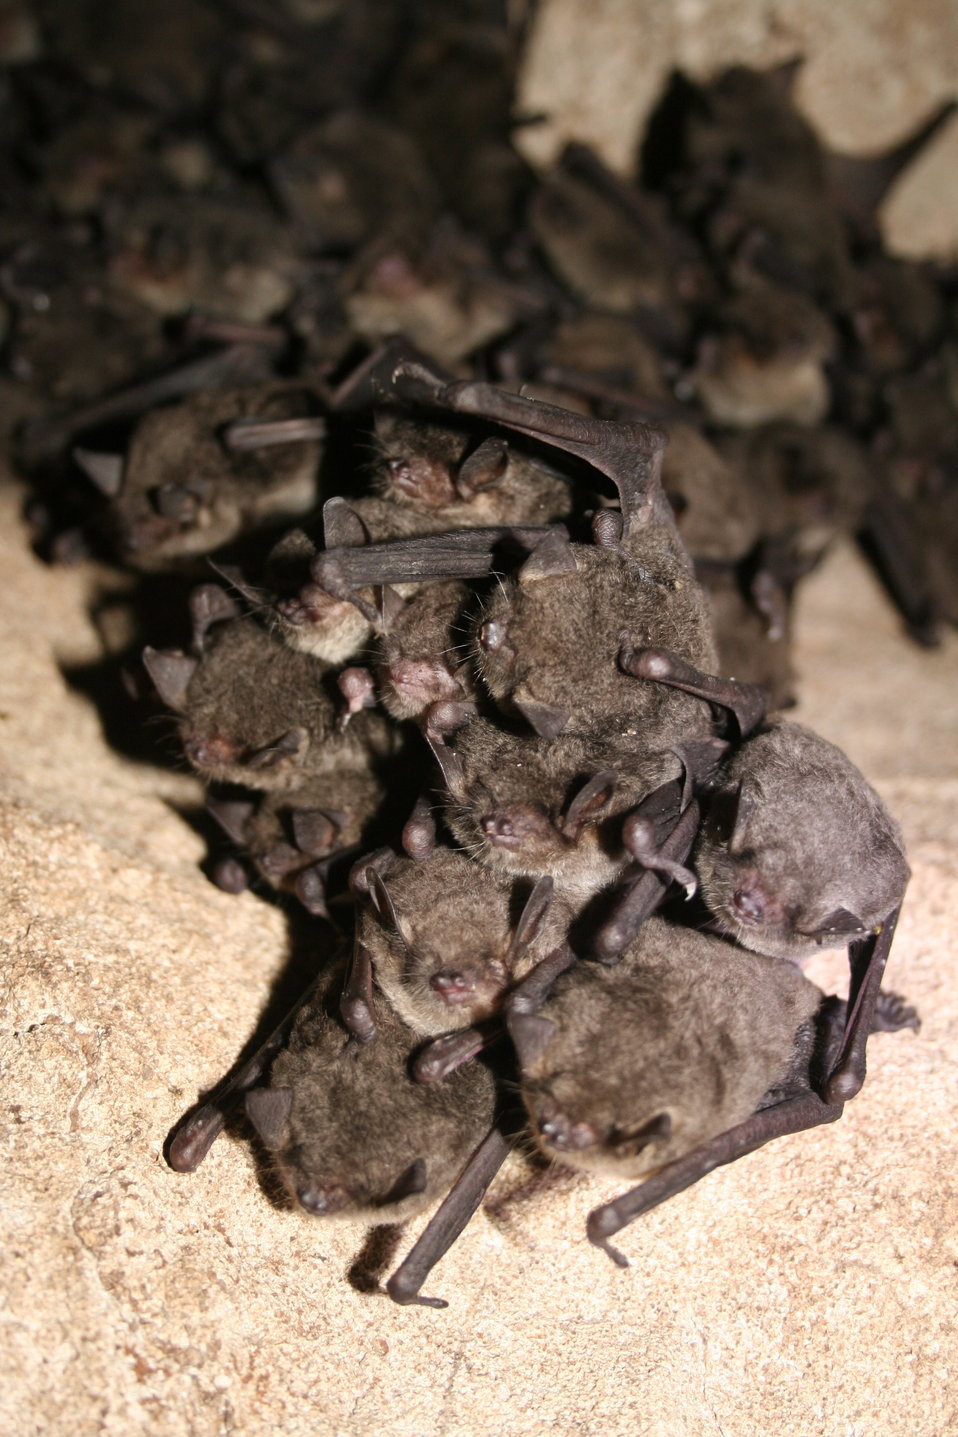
Cluster of gray bats

Cluster of hibernating gray bats (Myotis grisescens)